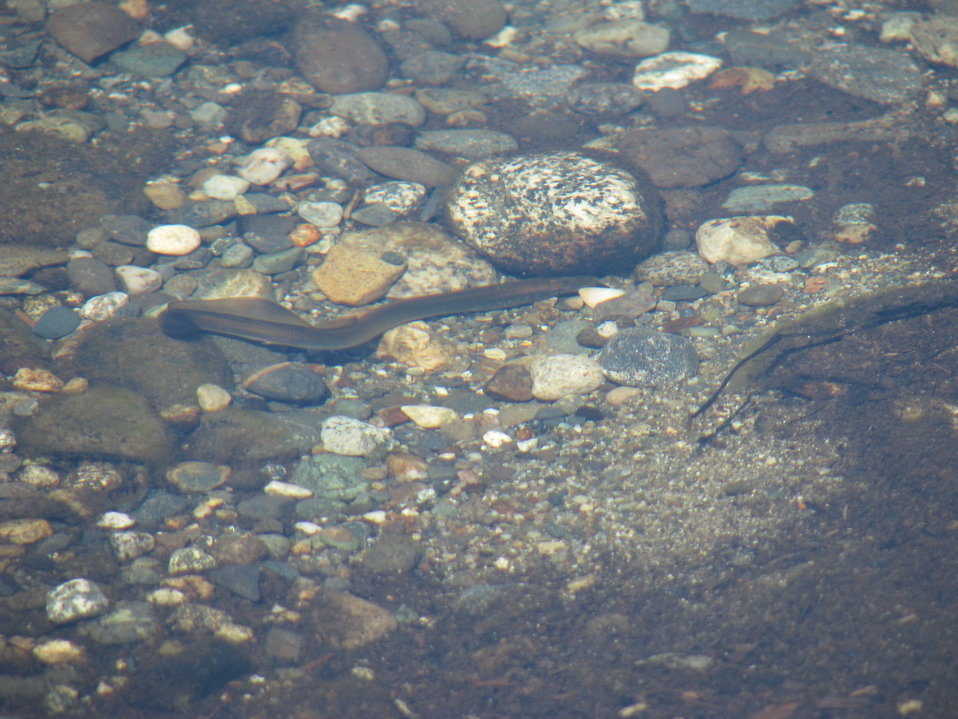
Lamprey